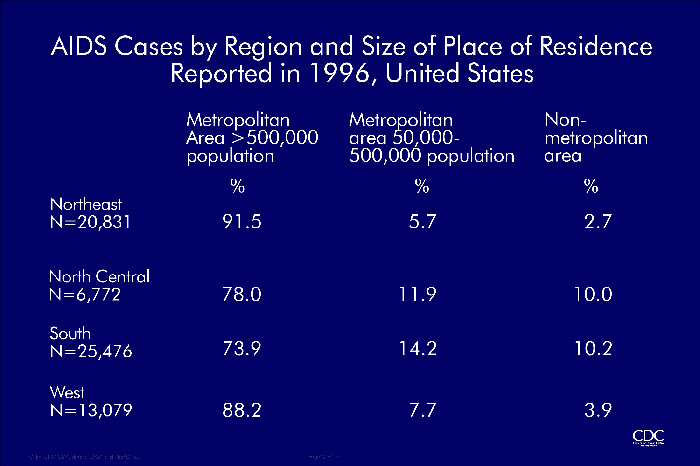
AIDS Cases by Region and Size of Place of Residence Reported in 1996, United States